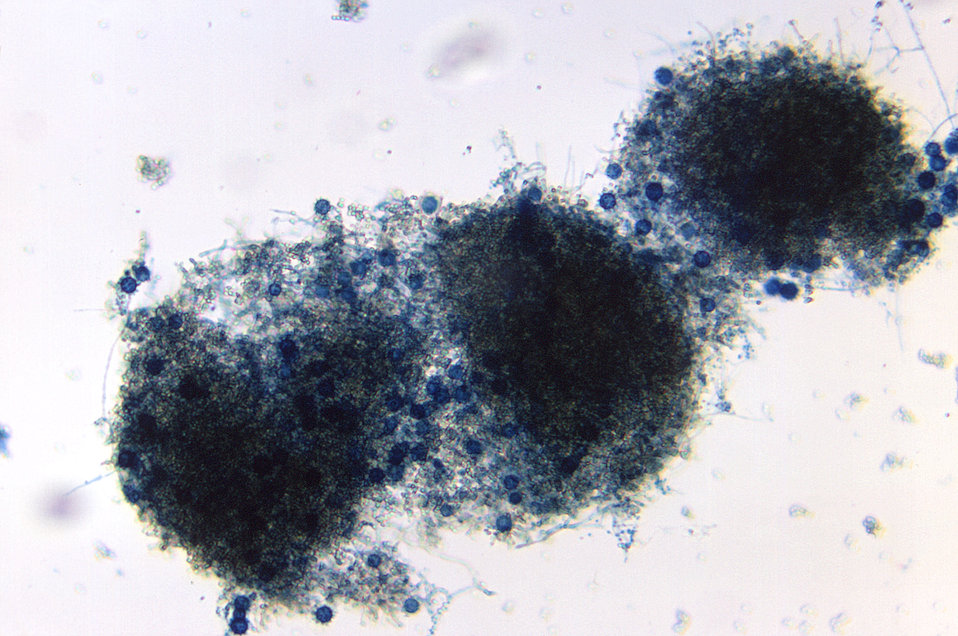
Under a low magnification of only 42X, this photomicrograph revealed some of the ultrastructural morphology displayed by Gymnoascus demonbreunii fungal organisms, including tightly-woven hyphae, cleistothecia and macroconidia.